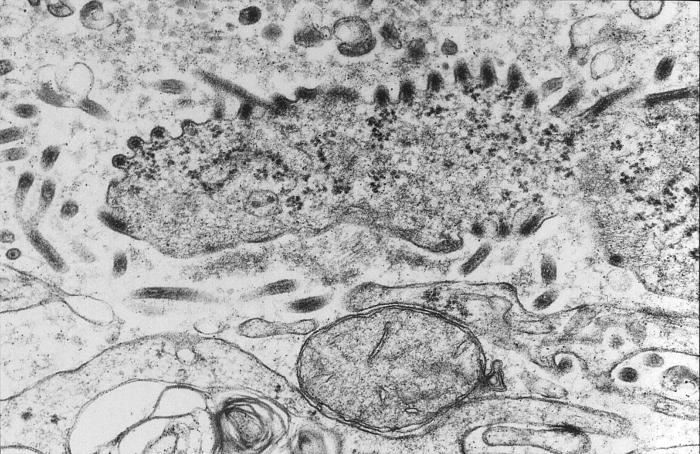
Created by CDC microbiologist Cynthia Goldsmith, this thin section transmission electron micrograph (TEM) revealed some of the ultrastructural morphologic changes brought on due to an Ebola Hemorrhagic Fever infection, including the presence of numbers of Ebola virions.